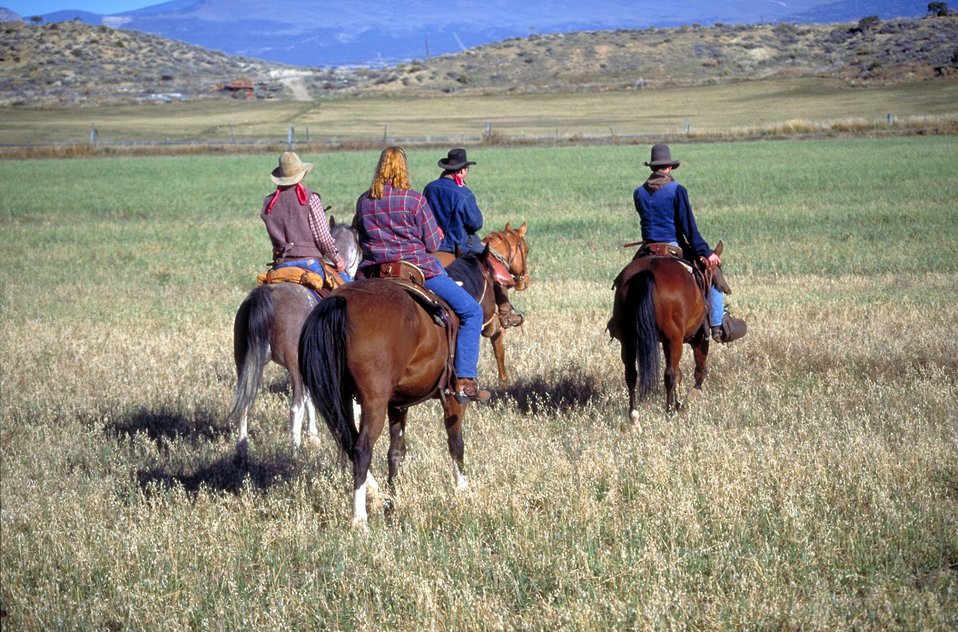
Working cowboys living near Vernal, Utah.